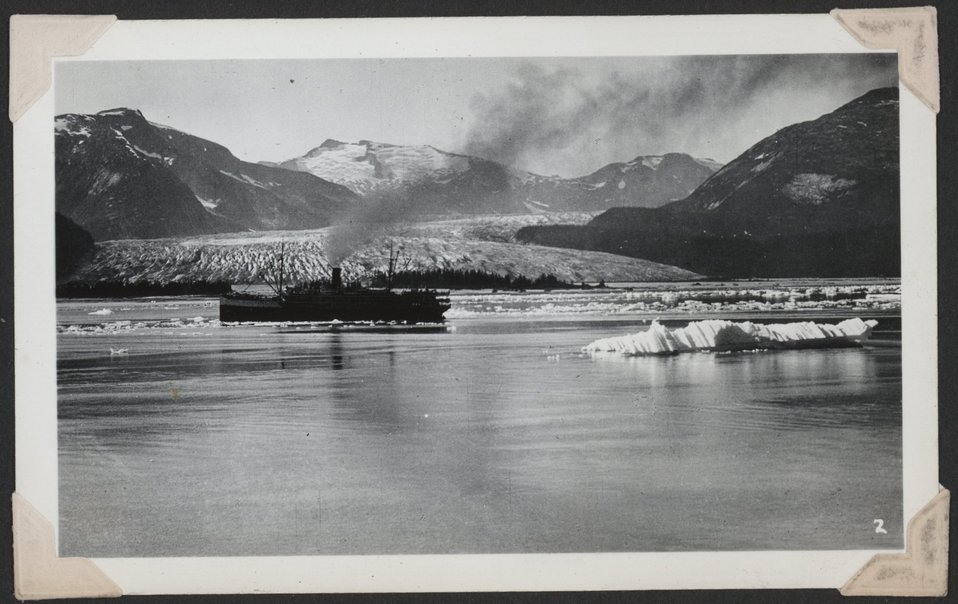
Tourist steamer at Norris Glacier.